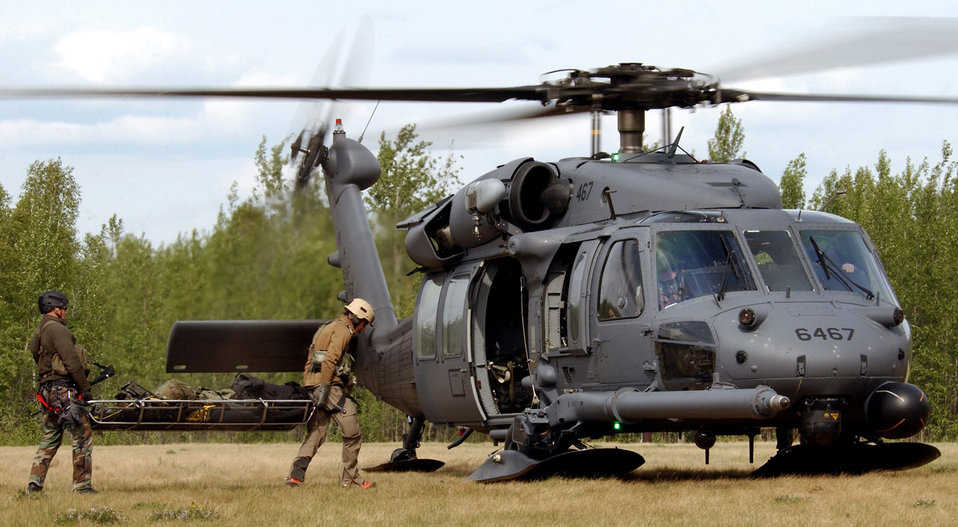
To the rescue during Northern Edge 2006

Airmen from the 31st Rescue Squadron at Kadena Air Base, Japan, load a patient onto an HH-60 Pave Hawk during a combat search and rescue mission for exercise Northern Edge 2006 at Fort Wainwright, Alaska, on Tuesday, June 6, 2006. Northern Edge is a joint training exercise hosted by Alaskan Command. It is one of a series of U.S. Pacific Command exercises that prepare joint forces to respond to crises in the Asian Pacific region.